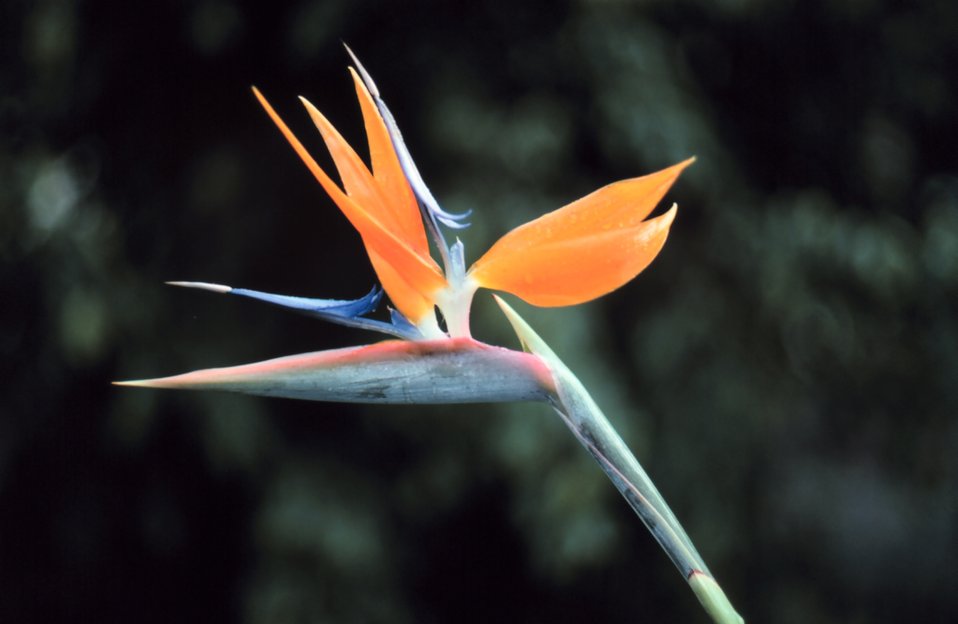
'Bird of Paradise' flower.